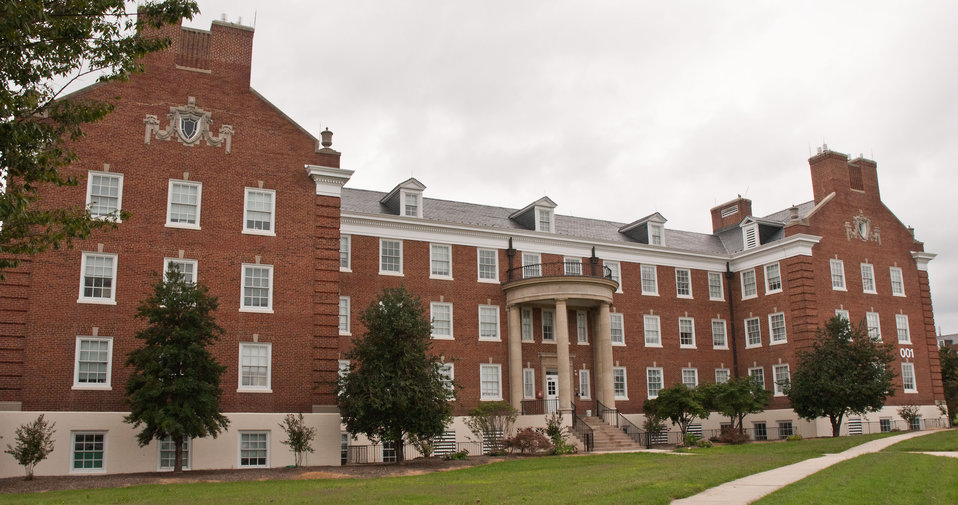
United States Department of Agriculture (USDA), Henry A. Wallace Beltsville Agricultural Research Center (001) is home to several science institutes, in Beltsville, MD, on Wednesday, September 21, 2011.